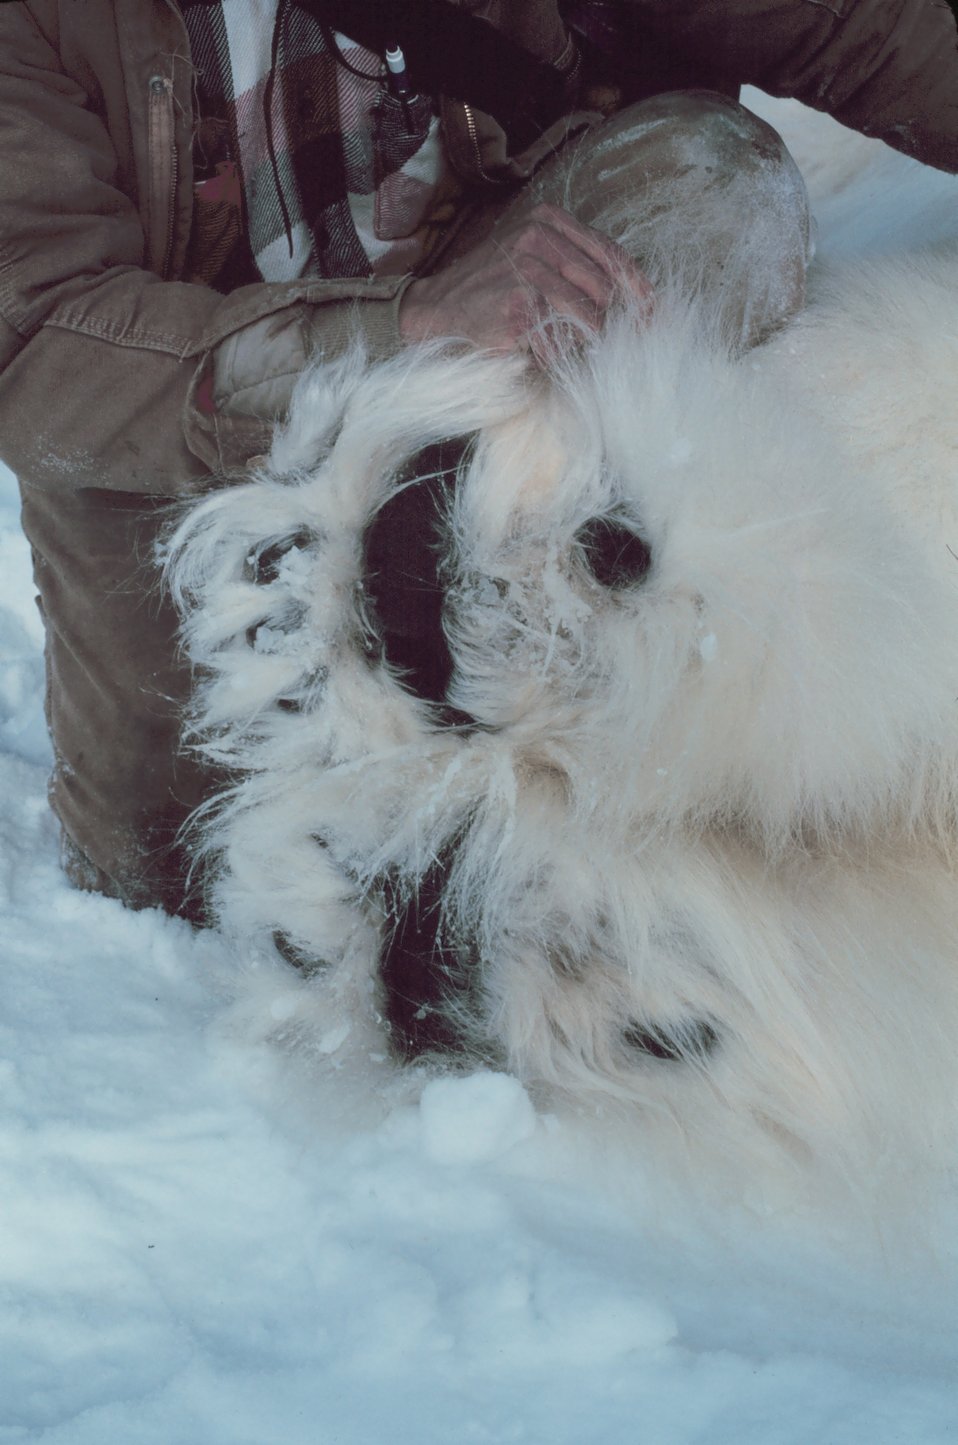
Large sedated polar bear - Ursus maritimus. Bears were measured and tagged for future study. Large padded feet for traction on the ice.